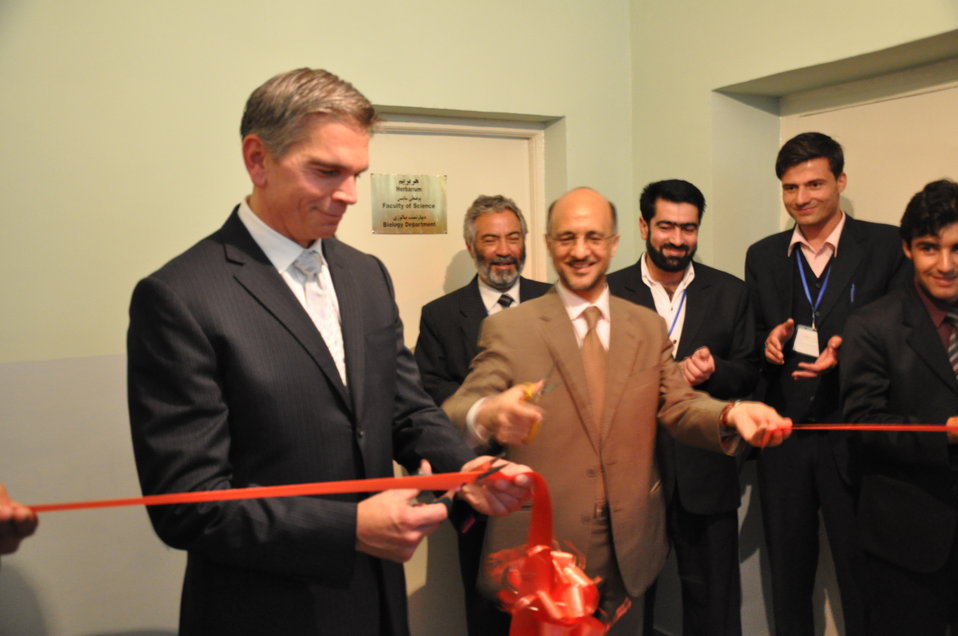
Kabul University Herbarium